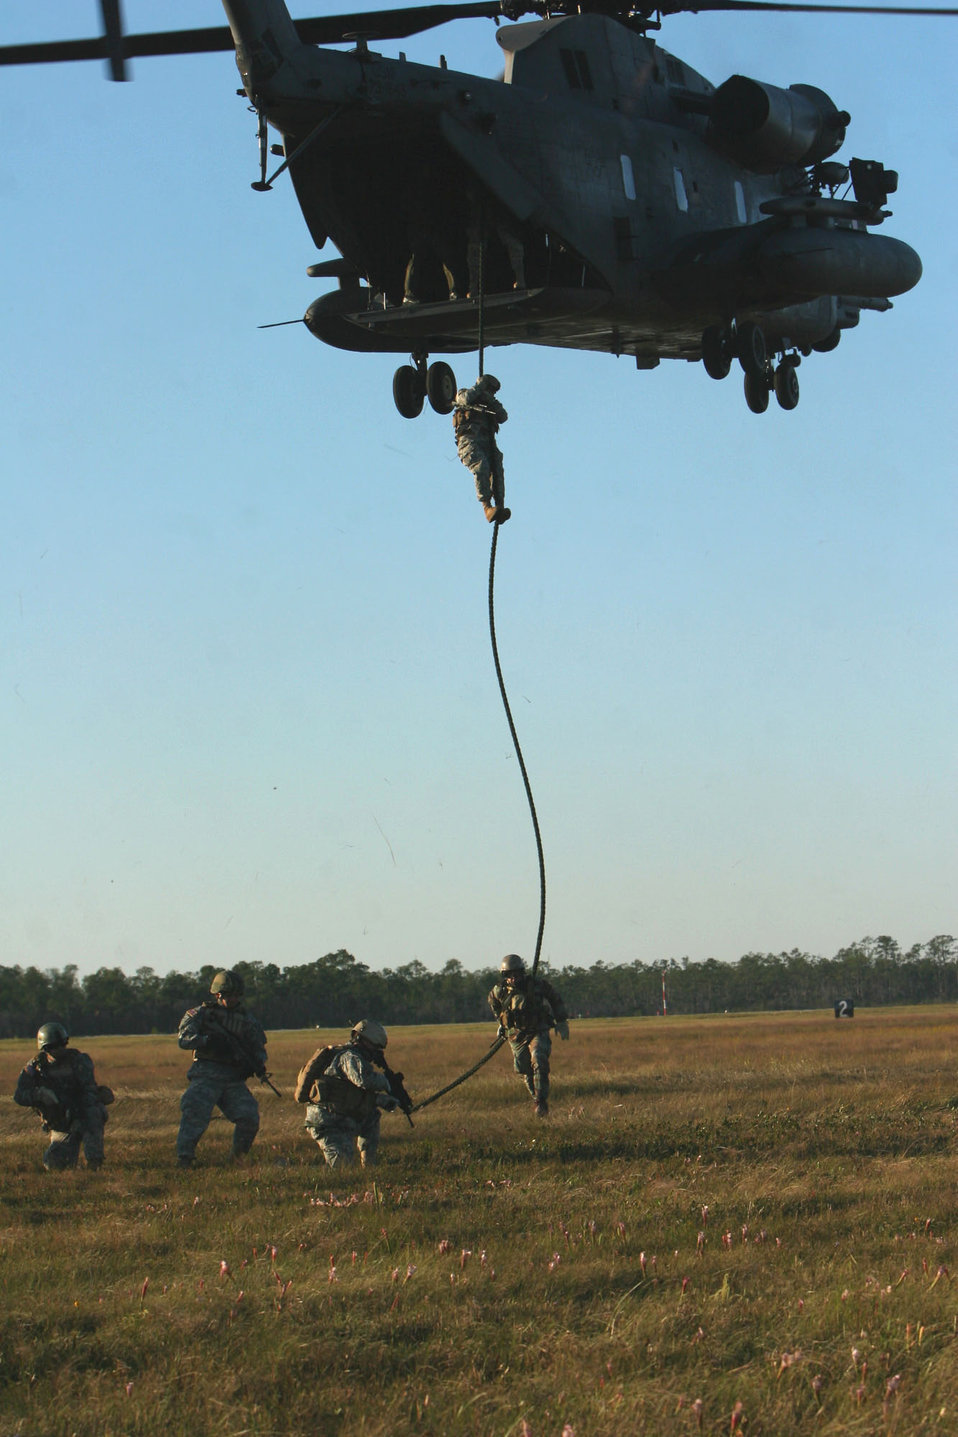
'Fast-roping' at Emerald Warrior

Green Berets practice